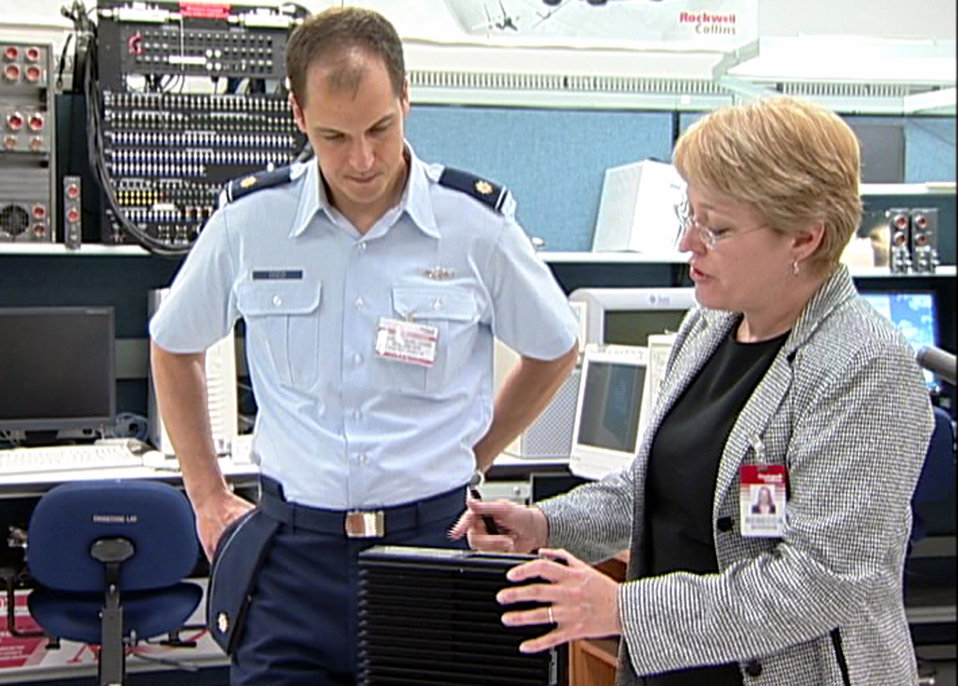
Flight information management initiative saves time, money

Maj. Daniel Cozzi talks with Rebecca Morrison about the Comprehensive Combat Flight Information System during a demonstration for the system in October 2006 at Rockwell's aviation laboratory in Cedar Rapids, Iowa. Ms. Morrison is a systems engineer for Rockwell Collins International, Inc. Major Cozzi is the project officer for the battlelab initiative Air Mobility Battlelab assigned to the Air Force Expeditionary Center at Fort Dix, N.J.